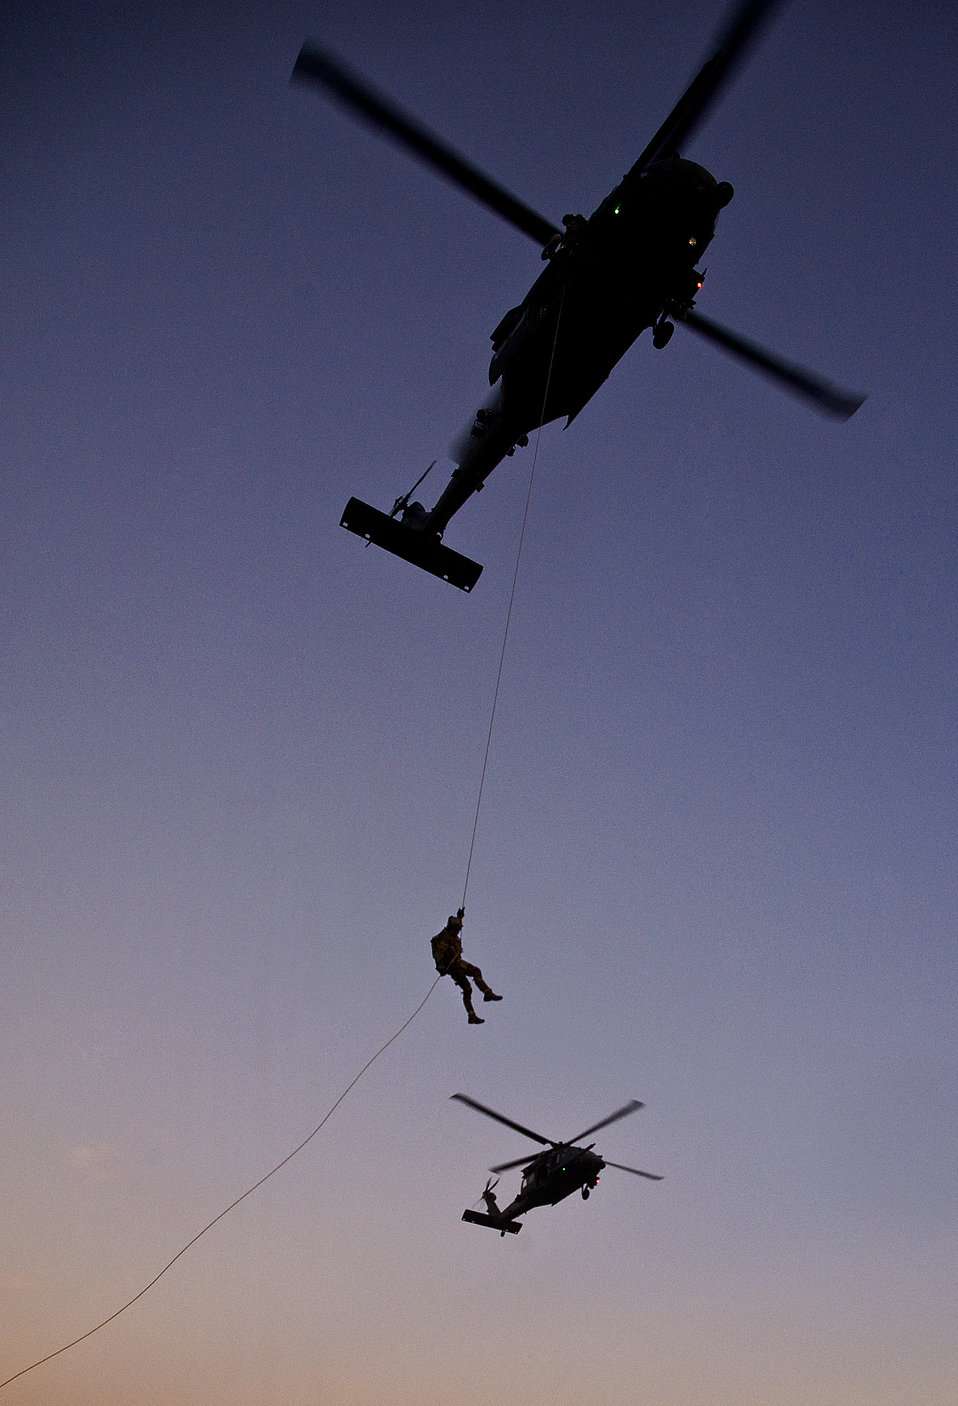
Look out below

An Air Force Reserve pararescueman rappels from an HH-60G Pave Hawk during a training mission at Patrick Air Force Base, Fla., March 9 to prepare for a space shuttle mission. The Air Force Reserve Command's 920th Rescue Wing provides primary rescue support for astronauts.